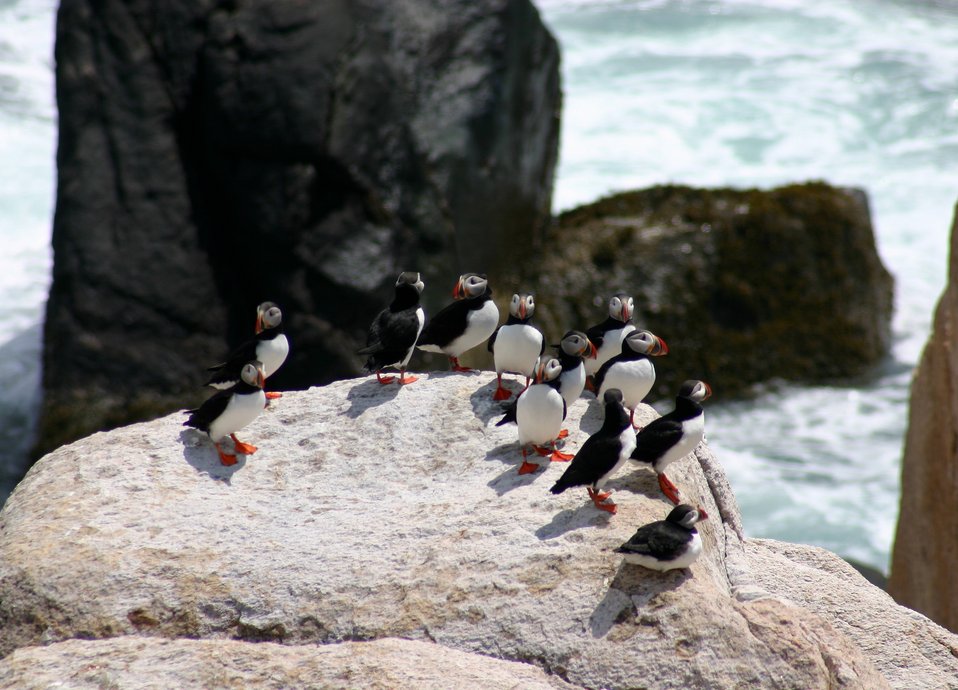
Atlantic puffins at Matinicus Rock at Maine Coastal Island National Wildlife Refuge